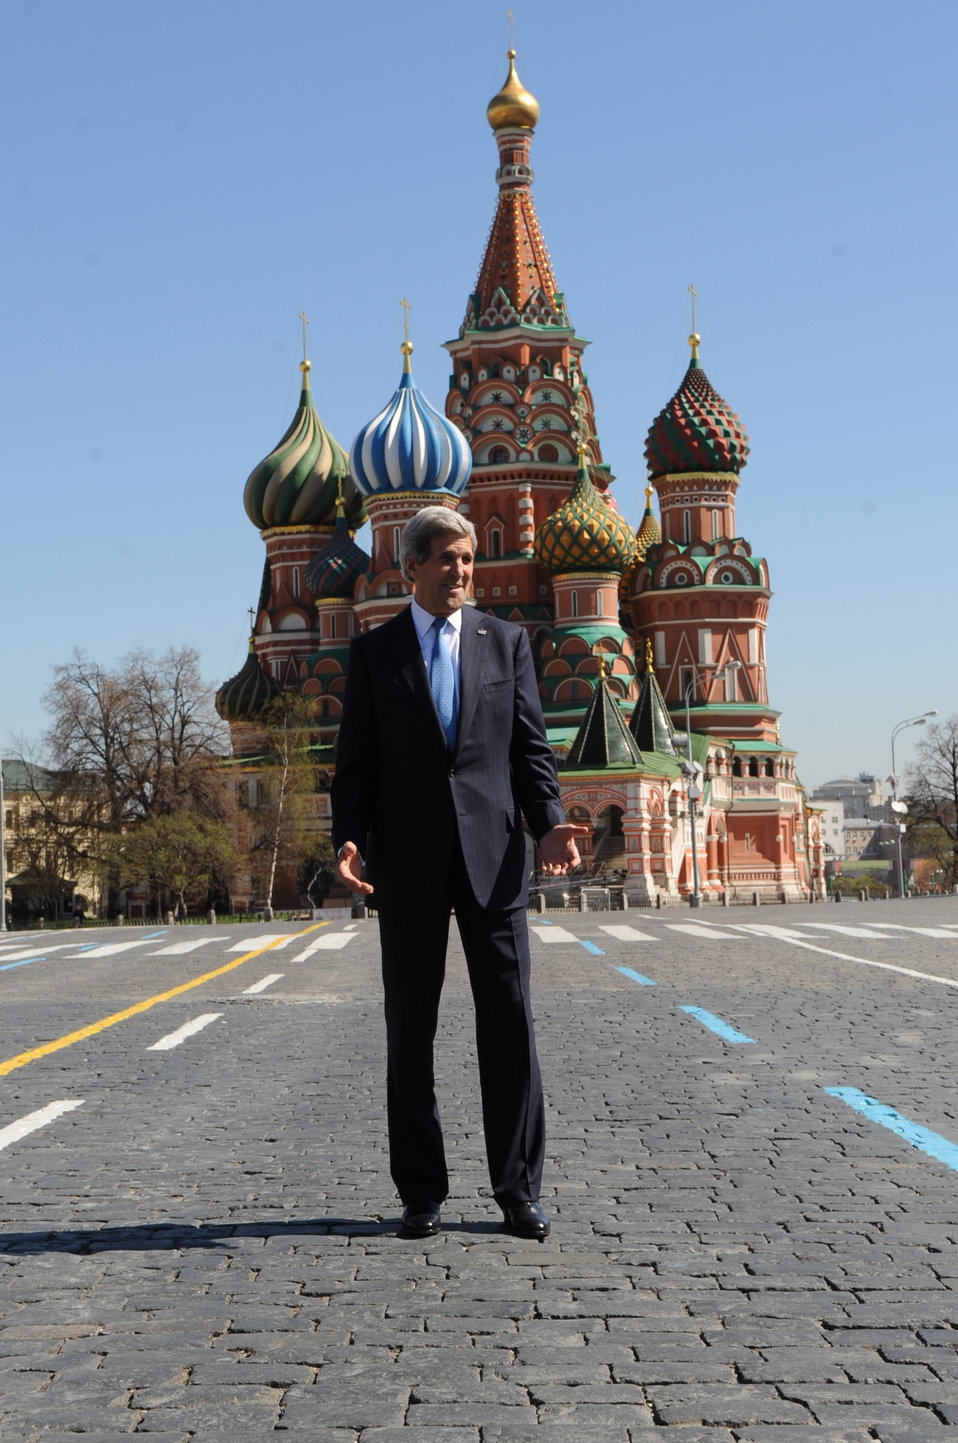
Secretary Kerry Tours Red Square

U.S. Secretary of State John Kerry stands in front of St. Basil's Cathedral in Red Square in Moscow, Russia, on May 7, 2013.